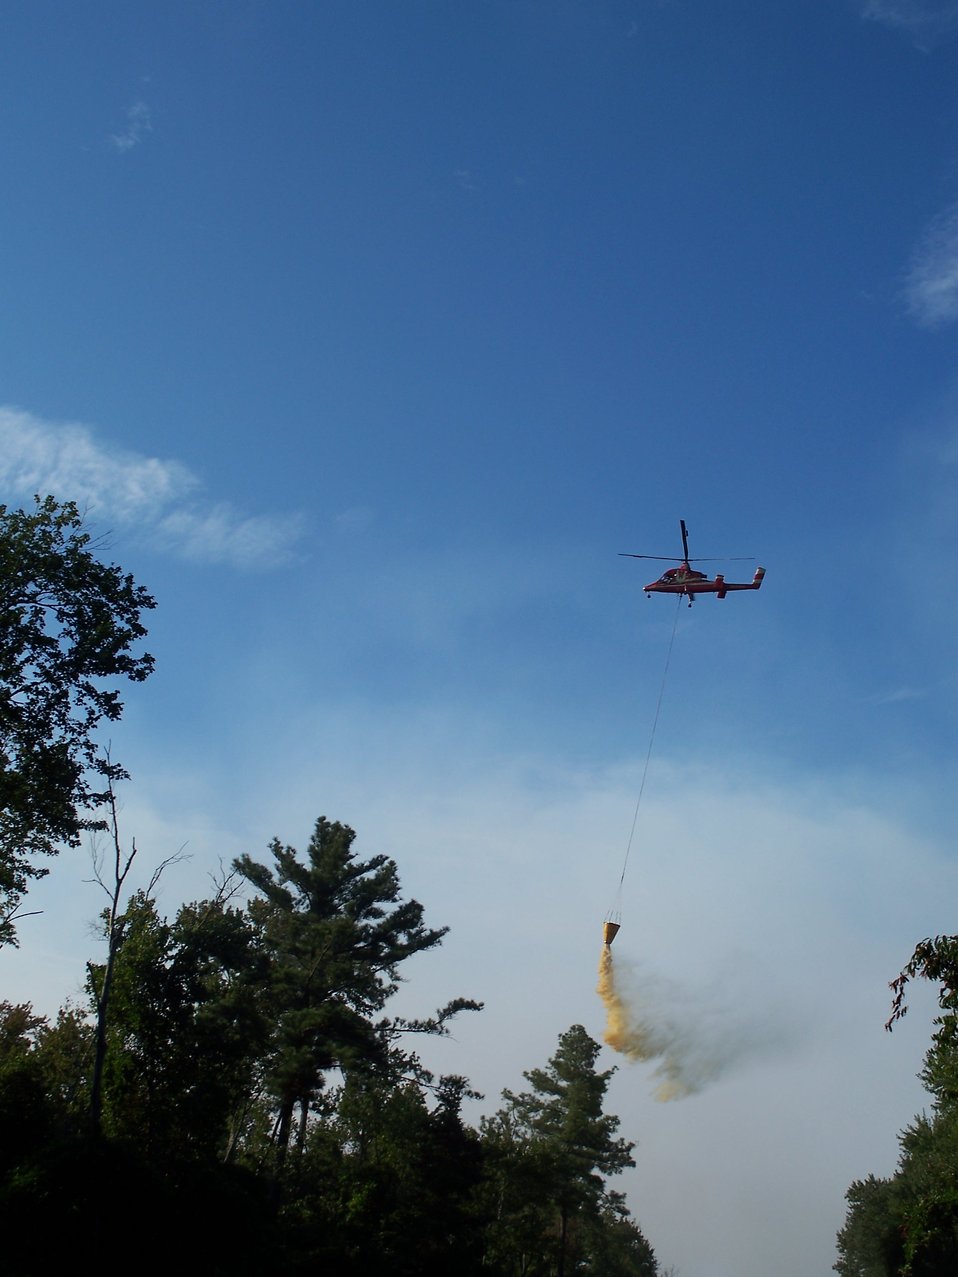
Bucket drop

Suffolk, VA, August 2011: A large helicopter drops about 700 gallons of water from a bucket on the Bull North Spot Fire at the Lateral West Fire.